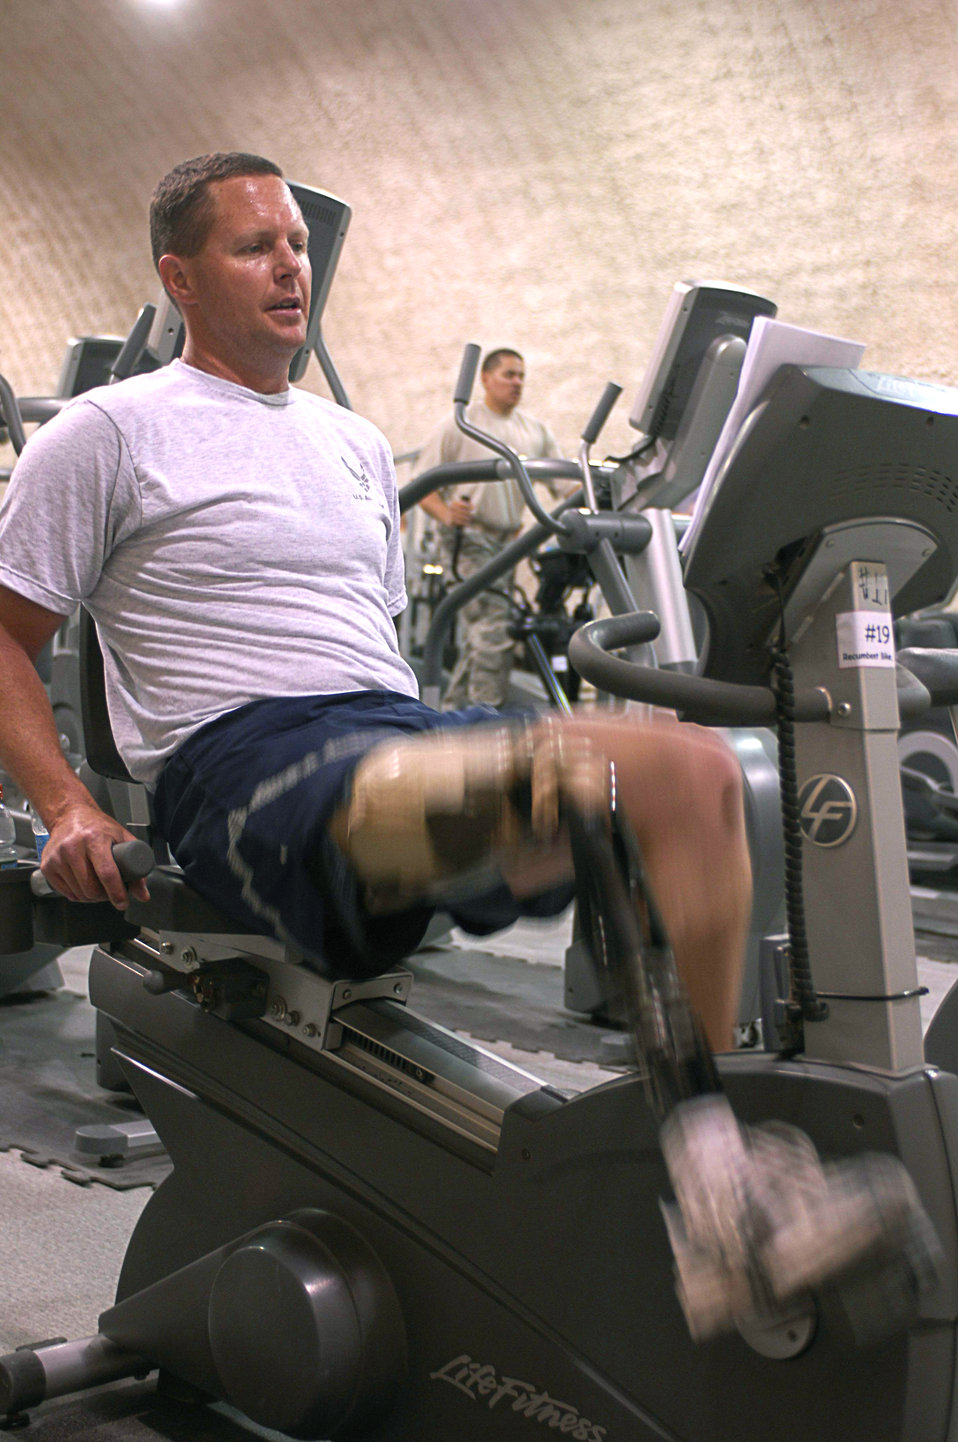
Amputee pilot completes third deployment

Major Alan Brown rides a stationary bicycle March 21 at Bagram Airfield, Afghanistan. Major Brown is an amputee C-130 Hercules pilot deployed with the 774th Expeditionary Airlift Squadron from the 187th Airlift Squadron of the Wyoming Air National Guard. He lost his leg in a hunting accident 10 years ago, and after seven years he regained his qualifcations to fly. Major Brown works out daily riding the stationary bike using a custom strap developed by the unit's life support crew.